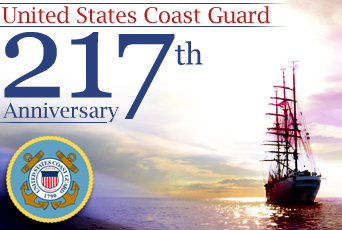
U.S. Coast Guard celebrates 217 years of service

The U.S. Coast Guard celebrates 217 years of service to the nation Aug. 4.